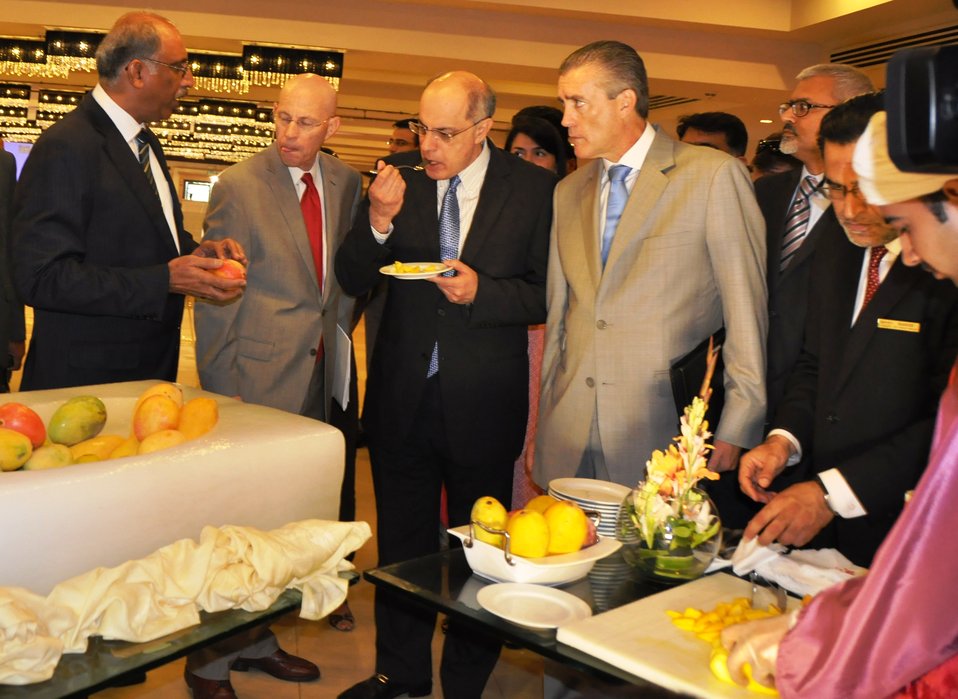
Mango Conference